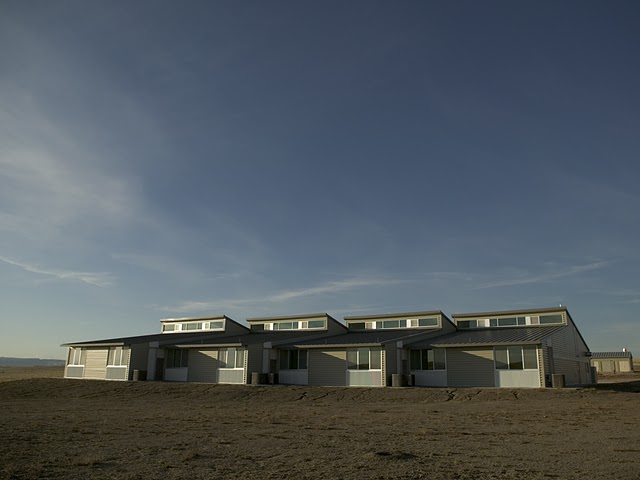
National Black-footed Ferret Conservation Center